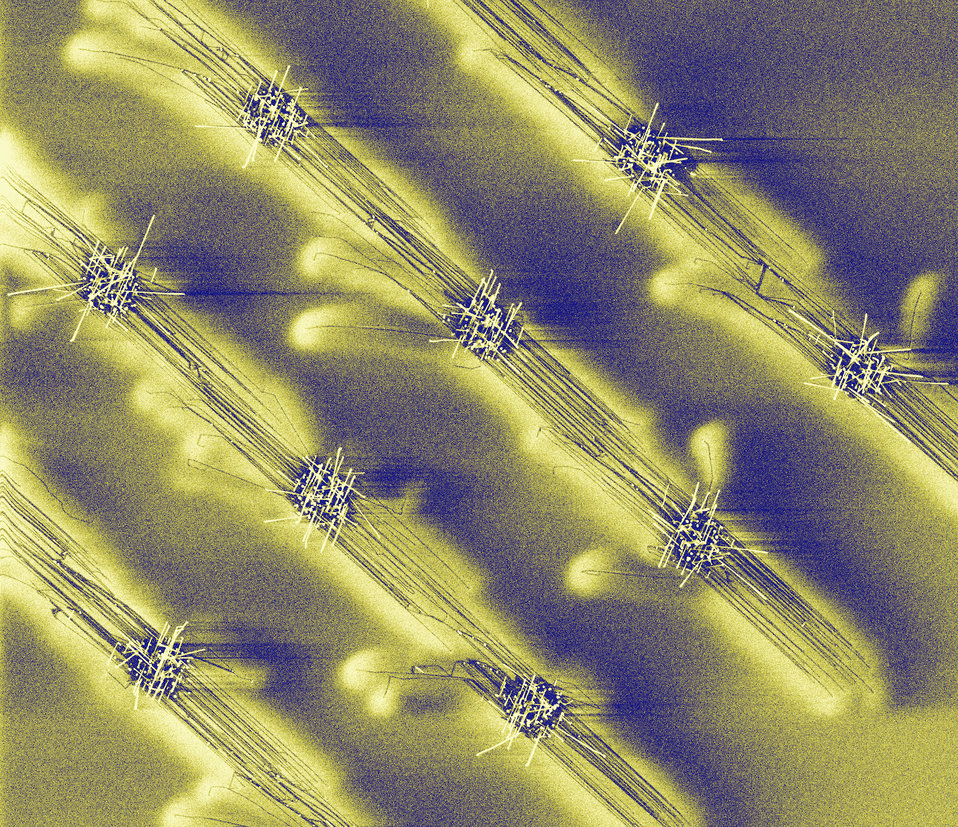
Zinc Nanowires

NIST scientists are able to control where and how these zinc oxide nanowires (colorized images) are grown. New techniques for making nanowires developed by researchers at NIST could lead to novel ways to mass produce tiny electronic components.

Credti: NIST